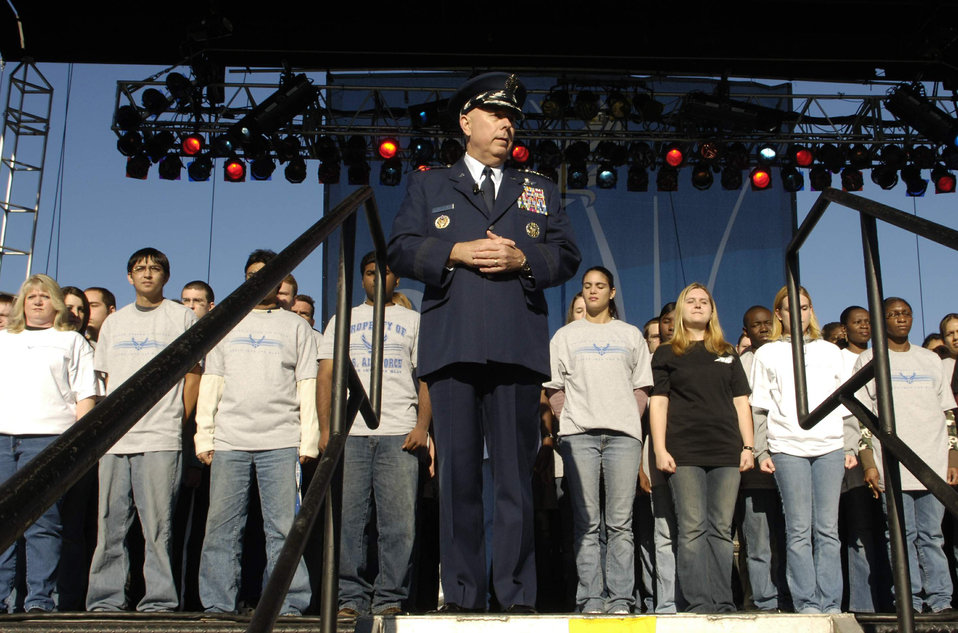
Induction ceremony at Air Force Memorial

Air Force Chief of Staff Gen. T. Michael Moseley welcomes 90 young men and women into the U.S. Air Force on Saturday, Oct. 14, 2006, during open house activities at the Pentagon prior to the official dedication ceremony of the Air Force Memorial. President George W. Bush will join Senior Defense Dept. and Air Force officials in a ceremony to present the memorial to the Nation. Desiged by the late James Ingo Freed the memorial with its three soaring spires inspired by the U.S. Air Force Thunderbirds bomb burst manuever, pays tribute to and honors the patriotic men and women of the U.S. Air Force and its predeccessor organizations. An open house will run near the Pentagon in conjunction with the dedication ceremony which will feature performances by the U.S. Air Force Band, the U.S. Air Force Honor Guard drill team, and will culminate with a concert featuring country music performer LeeAnn Womack.